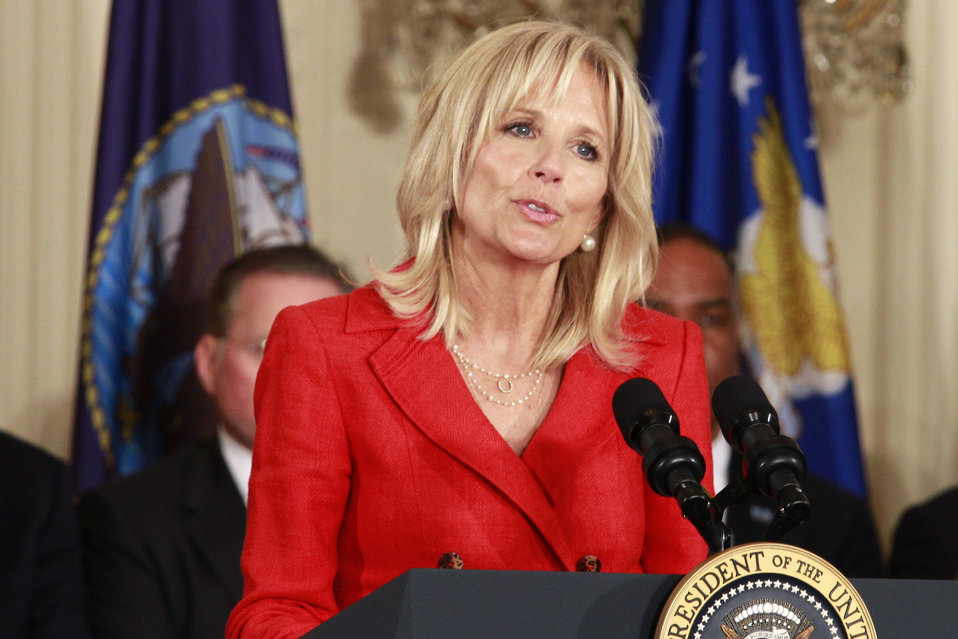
Joining Forces

Dr. Jill Biden, wife of Vice President Joe Biden, speaks, April 12, 2011, at the White House launch of 'Joining Forces,' a national initiative that calls on all sectors of society to join forces to support and honor service members and their families.